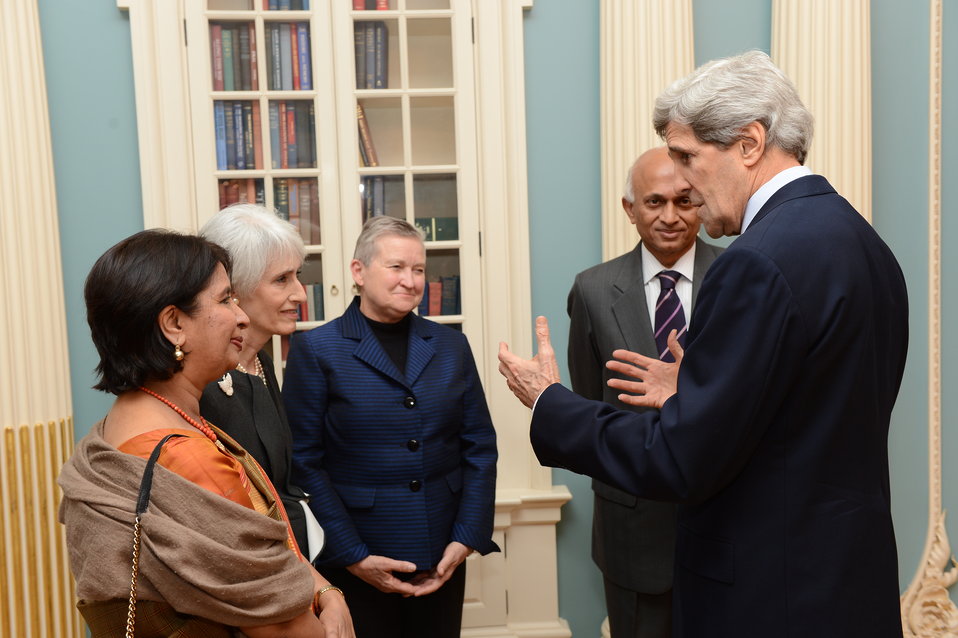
Secretary Kerry Meets With Indian Foreign Secretary Mathai

U.S. Secretary of State John Kerry meets with Indian Foreign Secretary Ranjan Mathai, far right, at the U.S. Department of State in Washington, D.C., February 21, 2013. Also pictured, left to right, are Indian Ambassador to the U.S. Nirupama Rao, U.S. Under Secretary for Political Affairs Wendy Sherman, and U.S. Ambassador to India Nancy J. Powell.